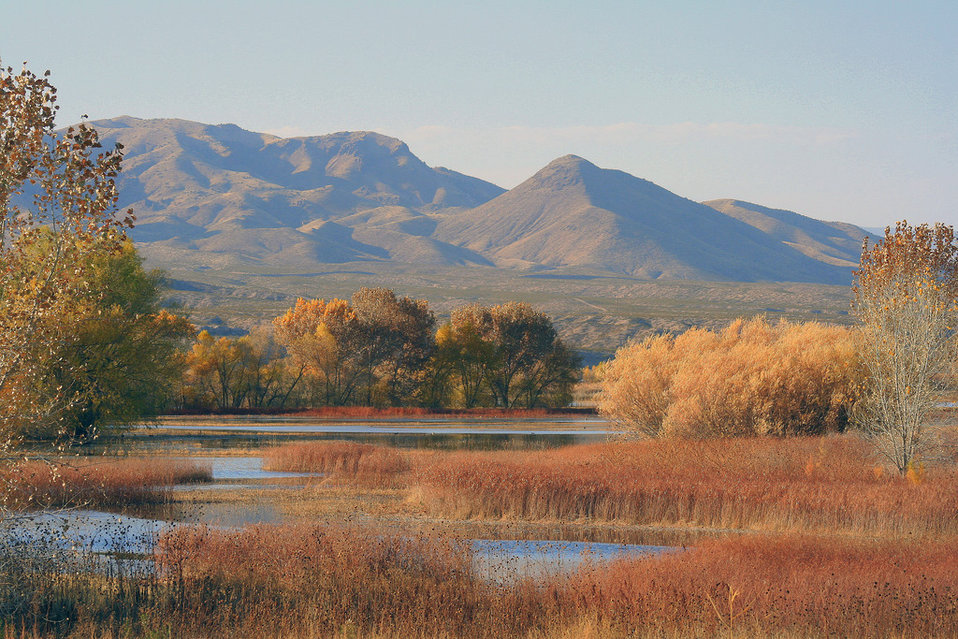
Uploaded by request of John M. Pratt

Taken in Bosque del Apache National Wildlife Refuge New Mexico

I took this picture while visiting the Bosque del Apache National Wildlife Refuge in New Mexico during their annual Crane Festival